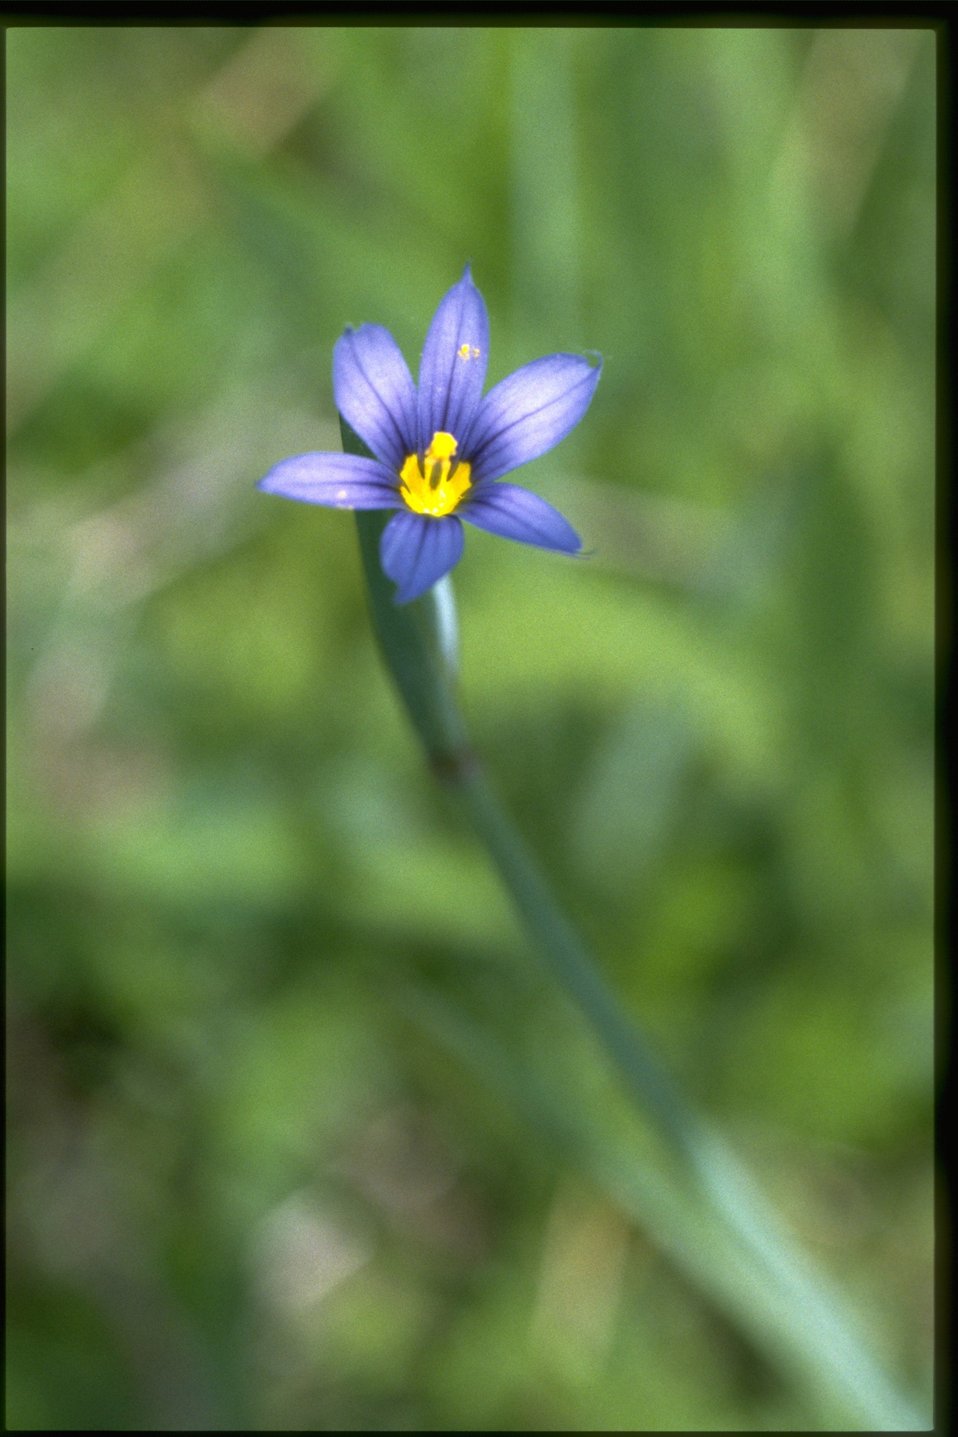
Medium shot of Sisyrinchium idahoense.